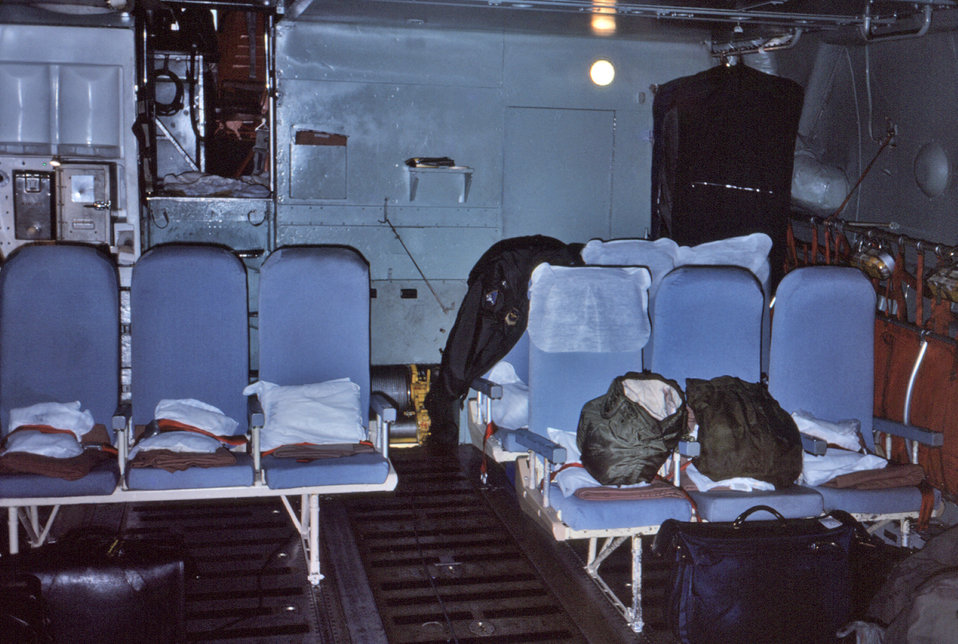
This 1976 photograph revealed the seating configuration inside the belly region of the C-141 jet aircraft, used to transport the CDC's mobile quarantine facility (MQF). It was in these seats where those personnel involved in the transportation of the MFQ would sit during their journey.